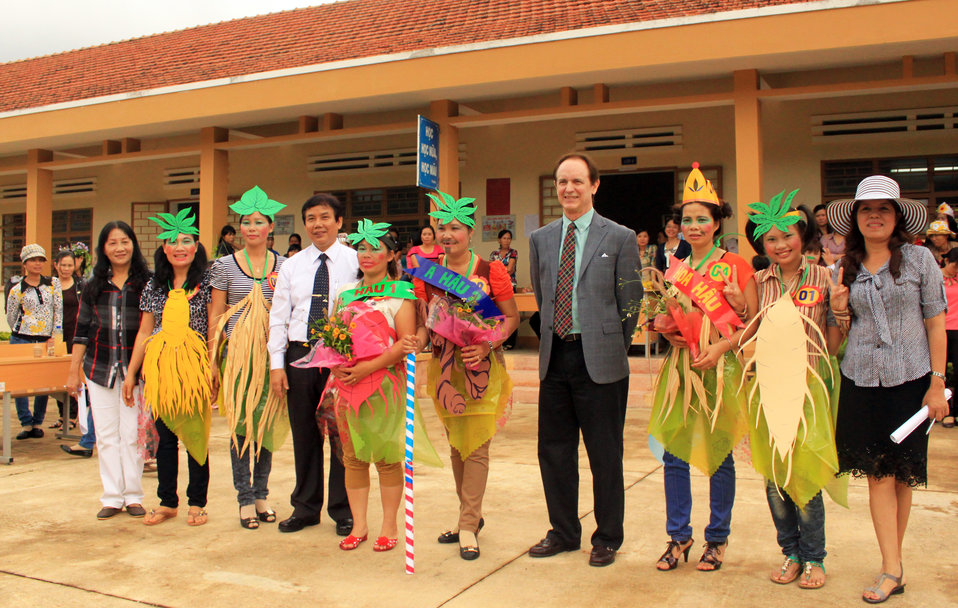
USAID Mission Director Francis Donovan joins local teachers as they practice what they learned from USAID-funded intensive training courses